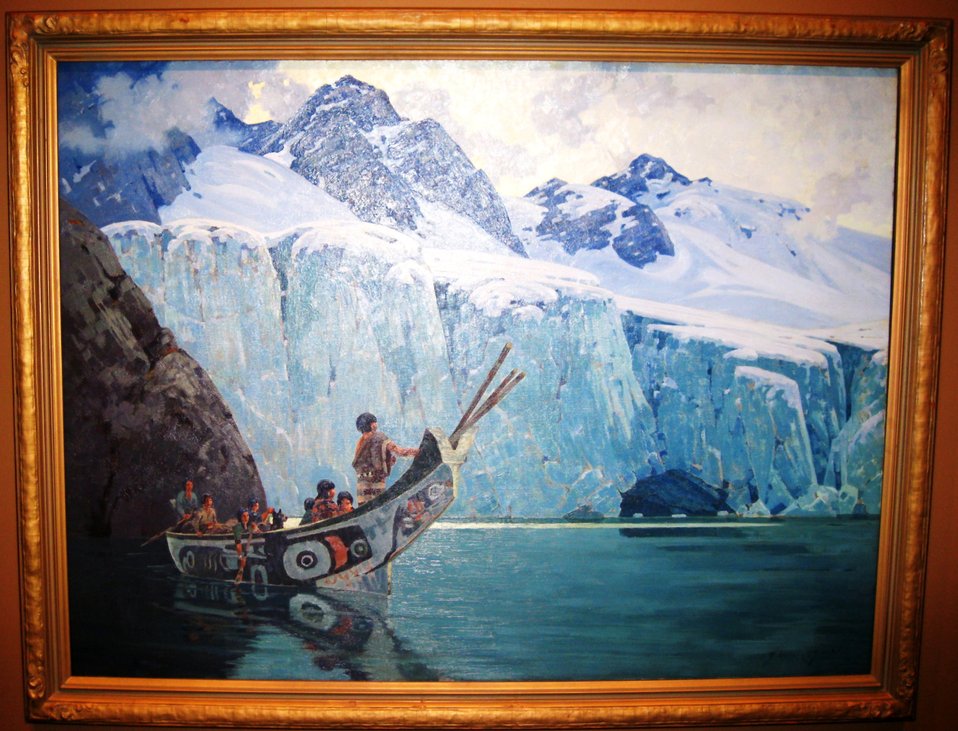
The Chief's Canoe by Belmore Brown. Painted prior to 1927.